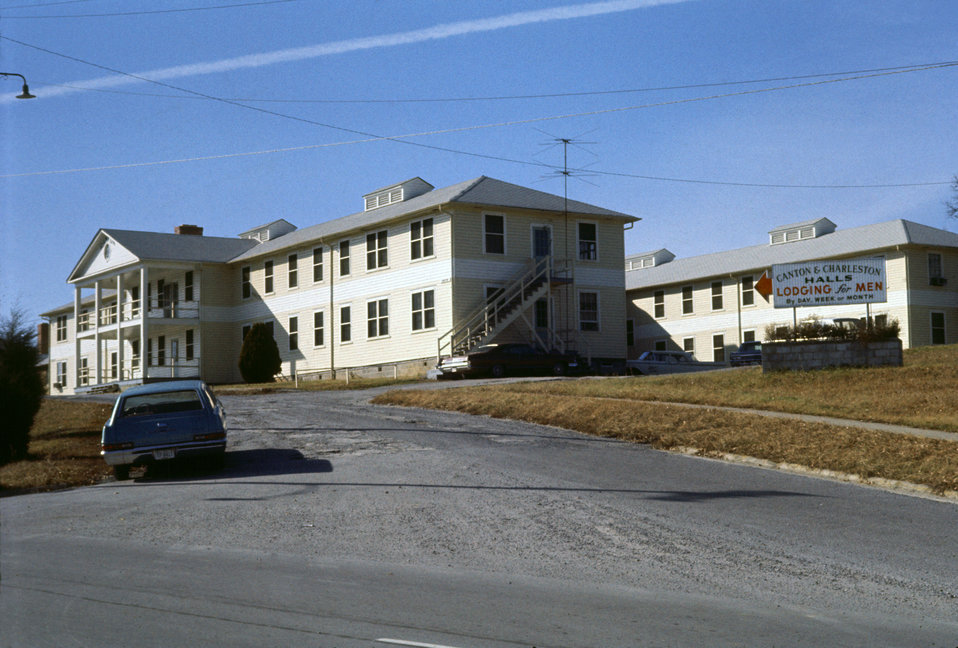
Canton and Charleston Halls Lodging for Men Oak Ridge

4433 DOE photo Frank Hoffman

Canton and Charleston Halls Lodging for Men Oak Ridge 1970